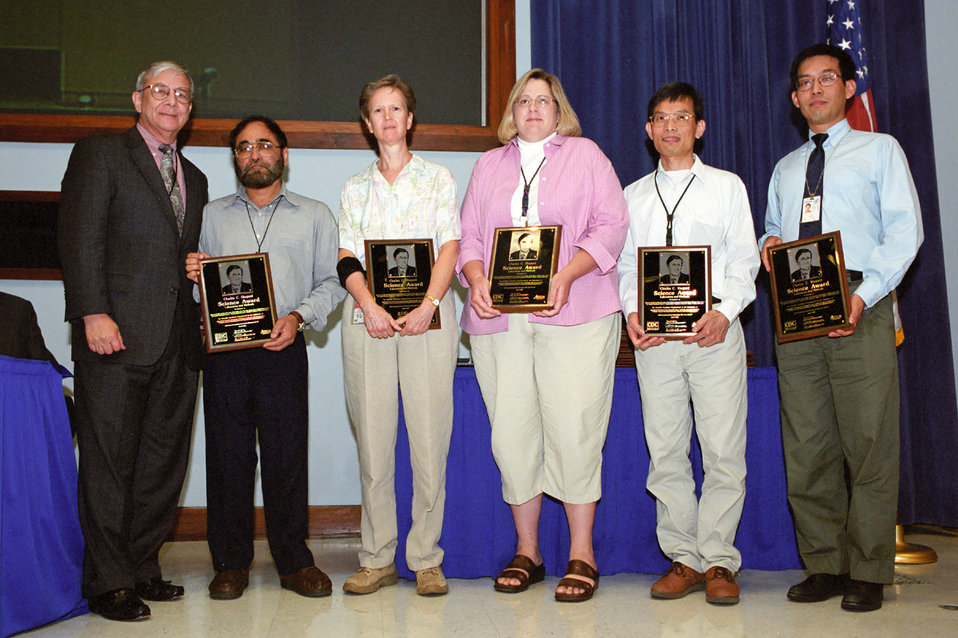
This photograph featured CDC's Chief Officer for Science, Dixie Snider (left), posing with the 2003 recipients of the Charles C. Shepard Science Award. Beginning second from the left was Bharat Parekh, Susan Kennedy, Trudy Dobbs, Chou-Pong Pau, and Dale Hu.